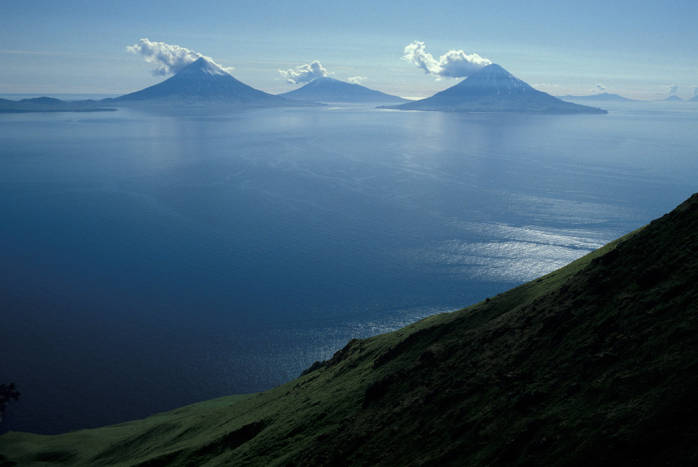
Alaska Maritime National Wildlife Refuge

Islands of the Four Mountains